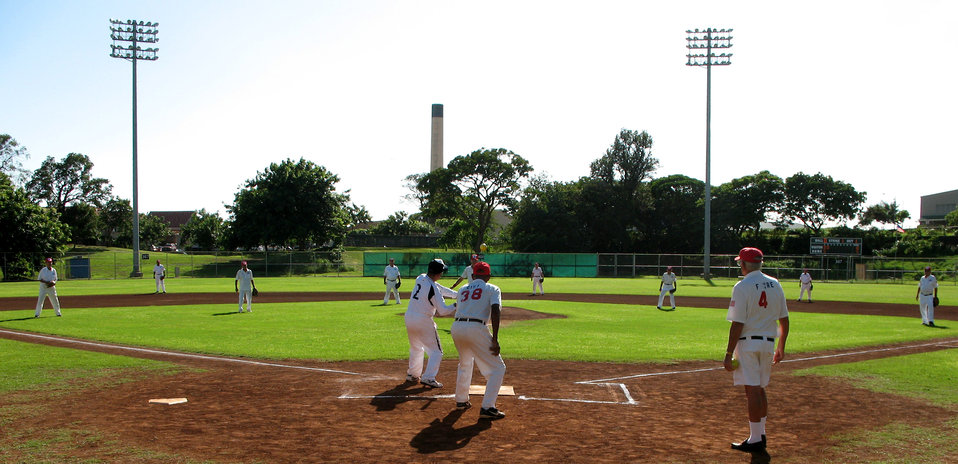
Time, and softball, heal old wounds

The Kids & Kubs senior softball team from St. Petersburg, Fl., and the Over the Rainbows senior softball team from Japan play a friendly game at Hans L'Orange Park in Waipahu, Hawaii Dec. 19. The two teams, comprising WWII veterans, met here to make peace with the past and play this historic game. The Kids & Kubs won the game 14-2.